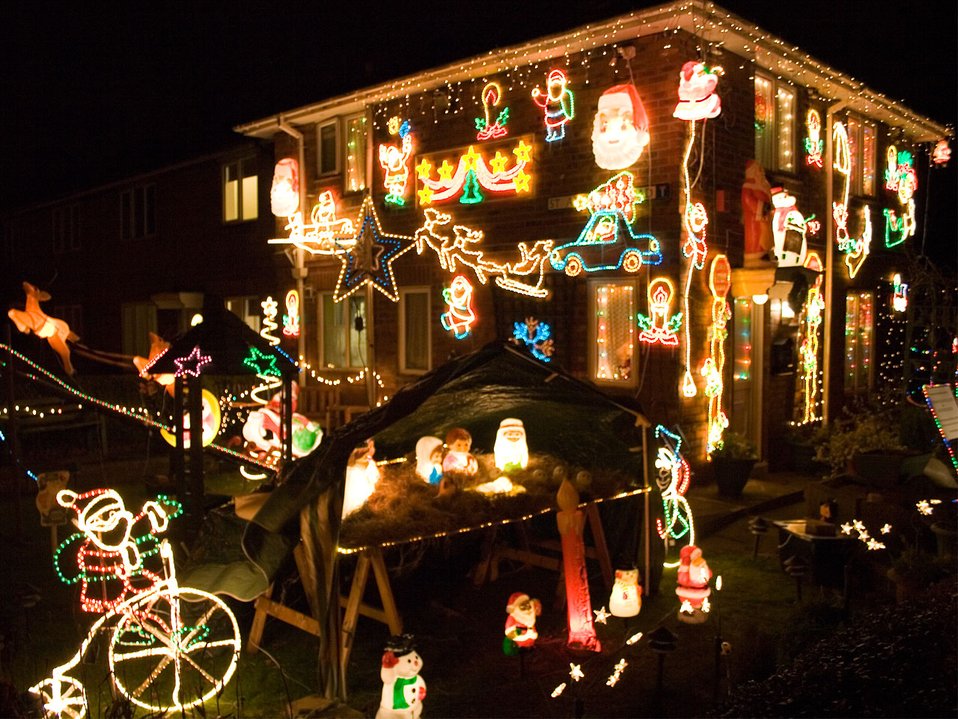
Christmas decoration on one house.